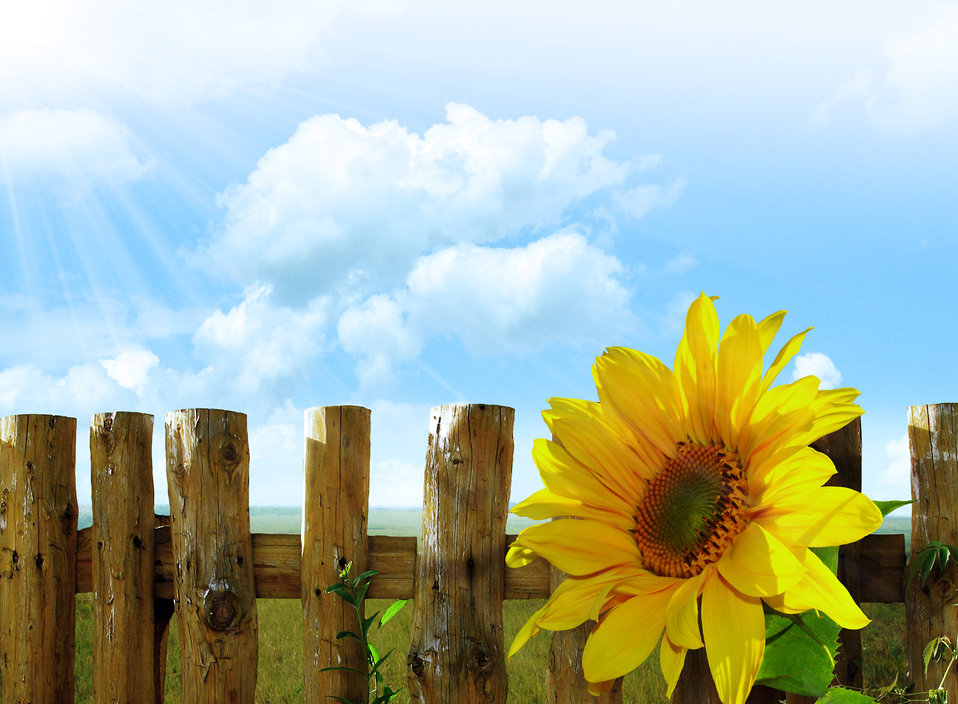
Sunflower in the sun.